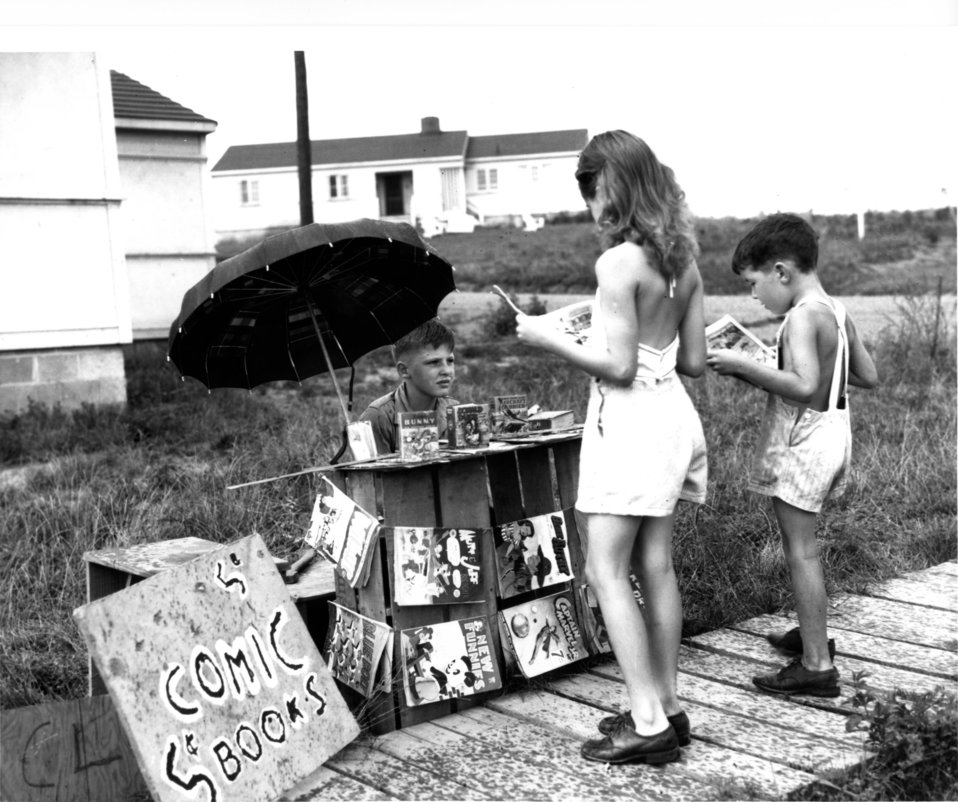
Daily Life at Oak Ridge